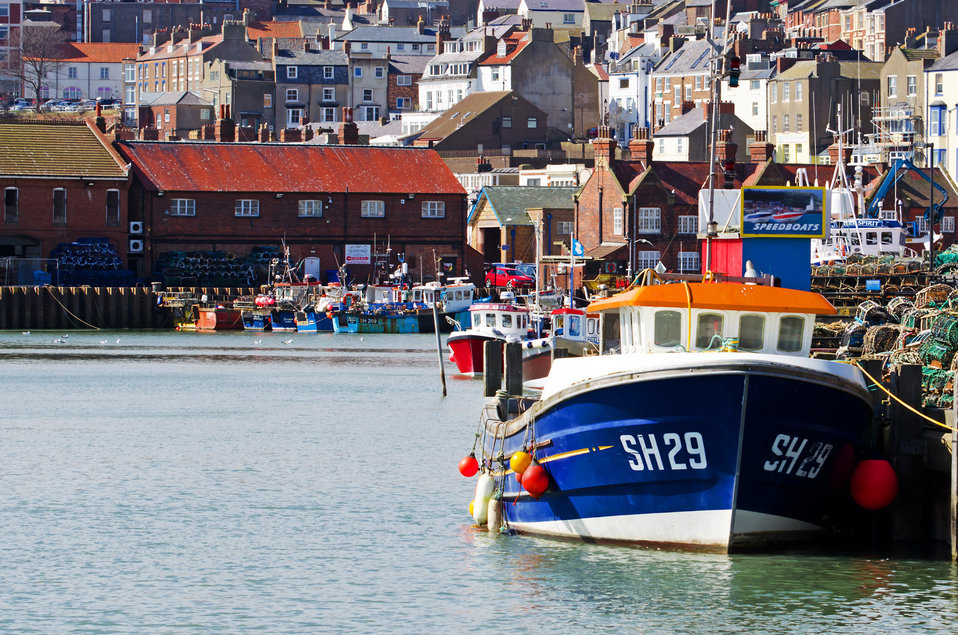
Ship in the harbor.